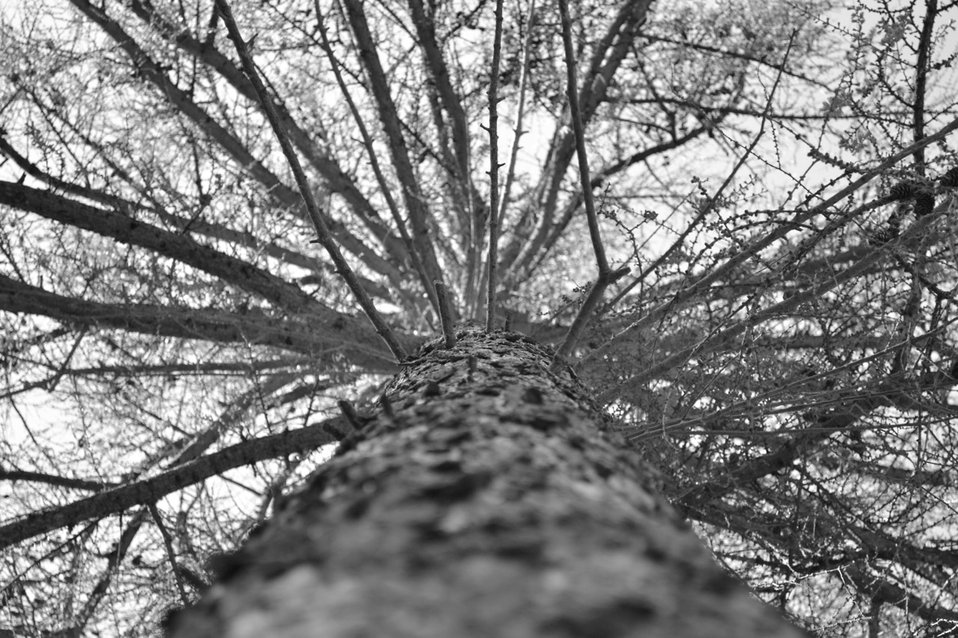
Woodland structure

Tree branch structure.